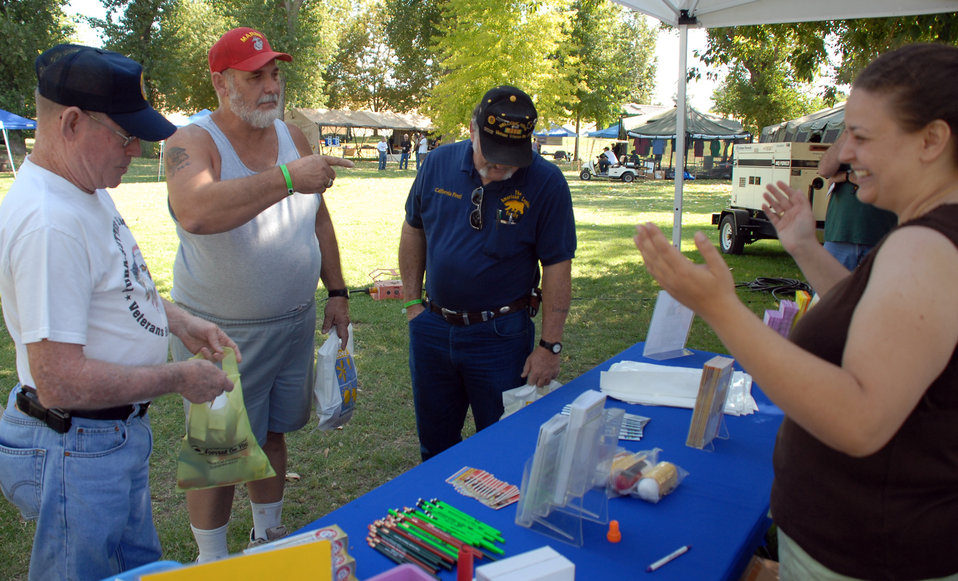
Airmen, community help vets

Karah Glavaris talks with several veterans including Gene Downing (right) Aug. 20 during the Yuba-Sutter Veterans Stand Down at River Bottoms Park in Maryville, Calif. Ms. Glavaris is a Yuba County Public Health representative. Mr. Downing is the American Legion District commander.